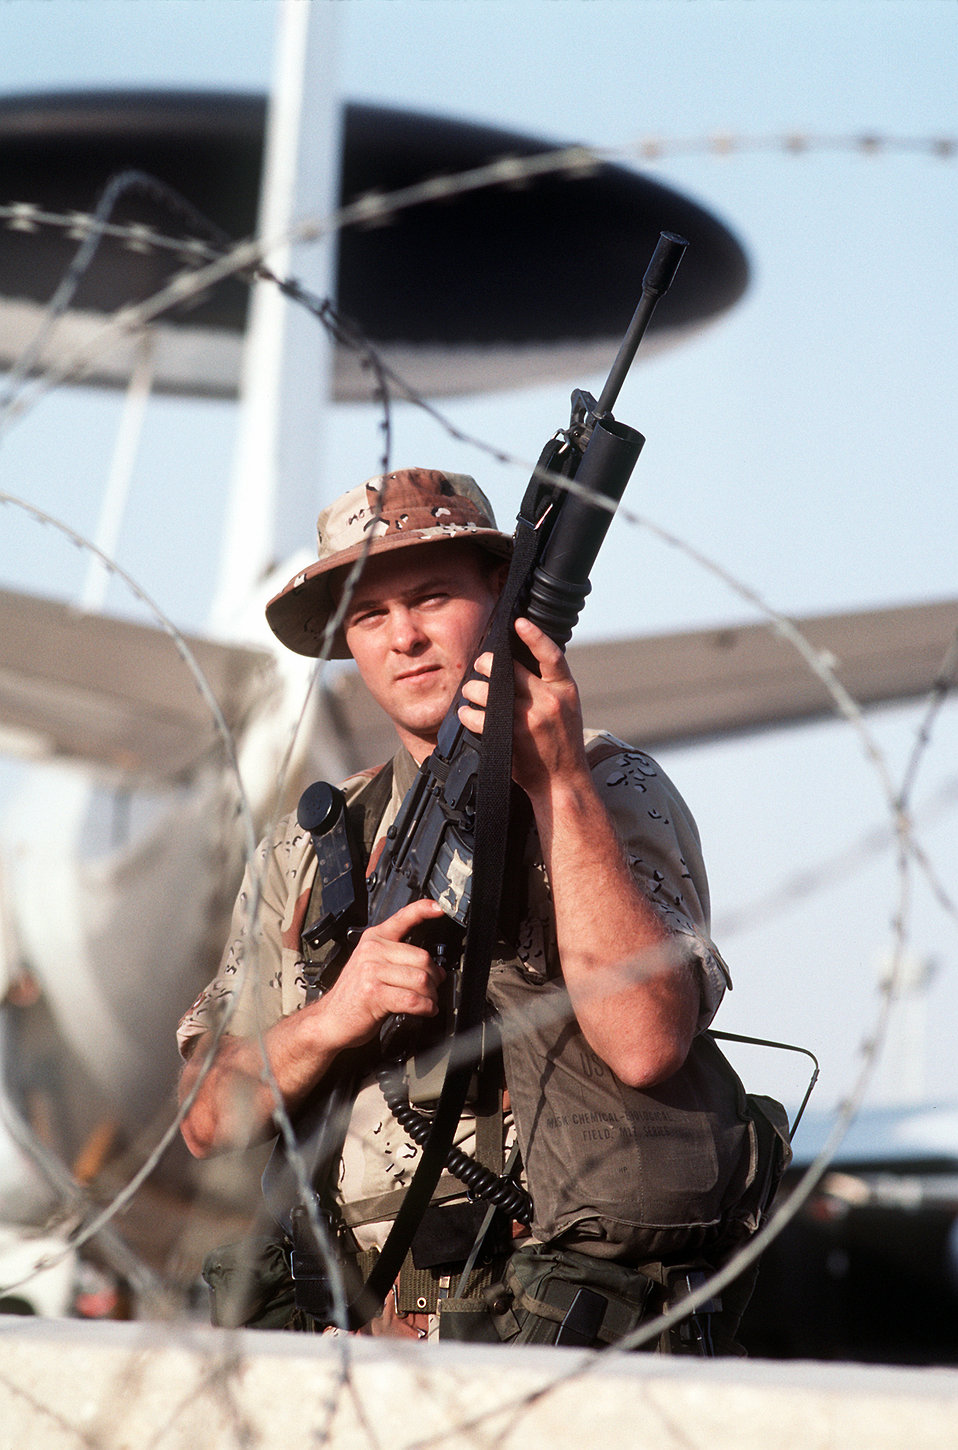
Airman stands guard near an E-3A Sentry

Airman 1st Class Robert Mott of the 90th Security Police Group stands guard near an E-3A Sentry aircraft during Operation Desert Shield. Mott is armed with an M-16A1 rifle equipped with an M-203 grenade launcher.